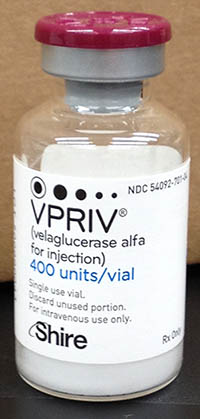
RECALLED – VPRIV® (velaglucerase alfa for injection)

March 14, 2014 – Product Recall – Shire Pharmaceuticals Initiates Voluntary Nationwide Recall of One Batch, Packaged into Three Lots, of VPRIV® (velaglucerase alfa for injection).